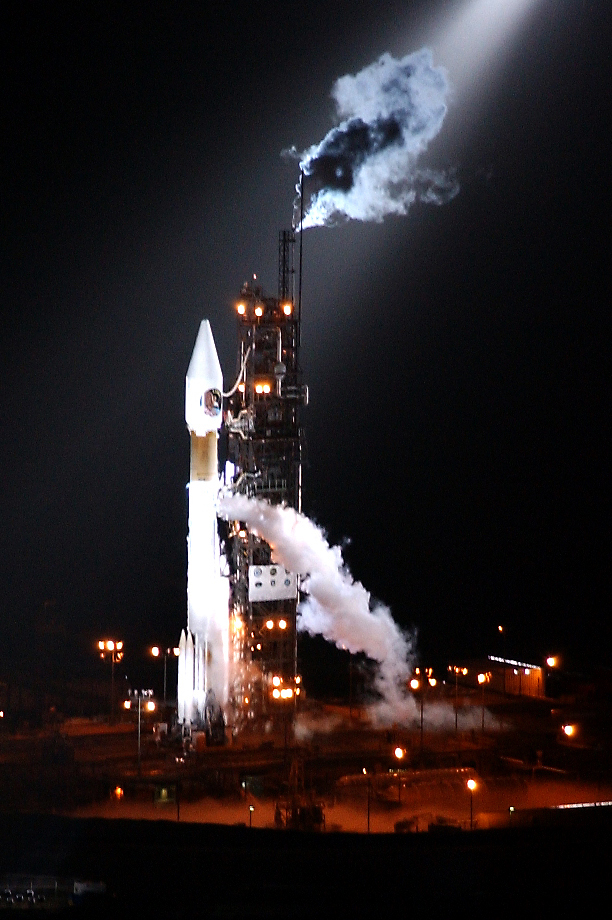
Ready to go

VANDENBERG AIR FORCE BASE, Calif. -- The last Atlas IIAS rocket launched from here Dec. 2. It carried a National Reconnaissance Office payload. The space launch complex will be refurbished to accommodate the Atlas V rocket. Atlas V is one of two evolved expendable launch vehicles set to provide medium and heavy space-lift capability here.